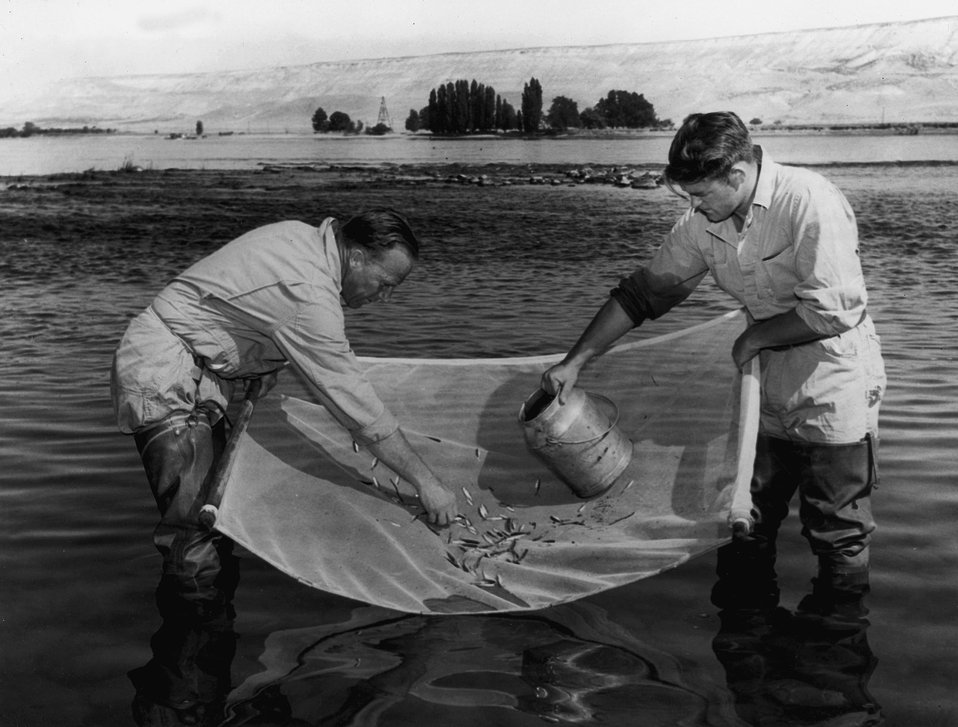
Small fish and animal life are seined in shallow parts of the Columbia River. c. 1960